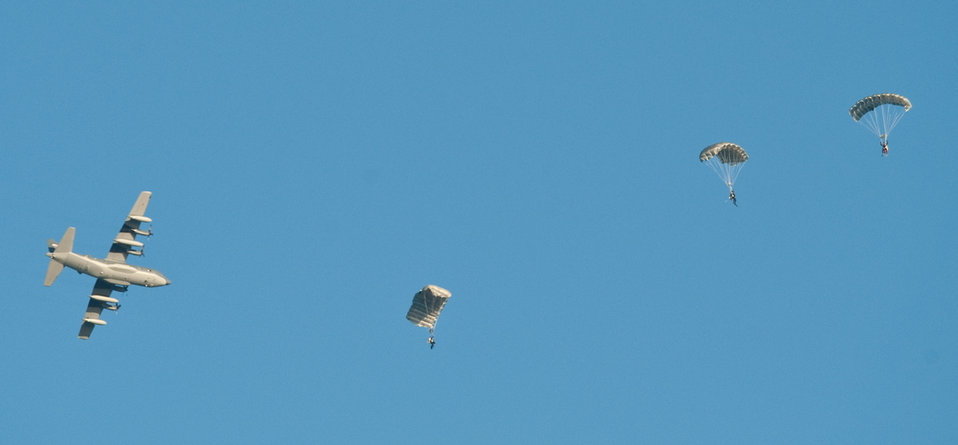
Pararescuemen participate in Air Force Week

Pararescuemen jump from an HC-130P/N King while performing a free-fall rescue demonstration Oct. 27, 2010, at Cocoa Beach, Fla. The demonstration was part of Air Force Week Cocoa Beach, a weeklong event is meant to showcase Air Force capabilities and increase public awareness. The pararescuemen are from the 920th Rescue Wing at Patrick Air Force Base, Fla.